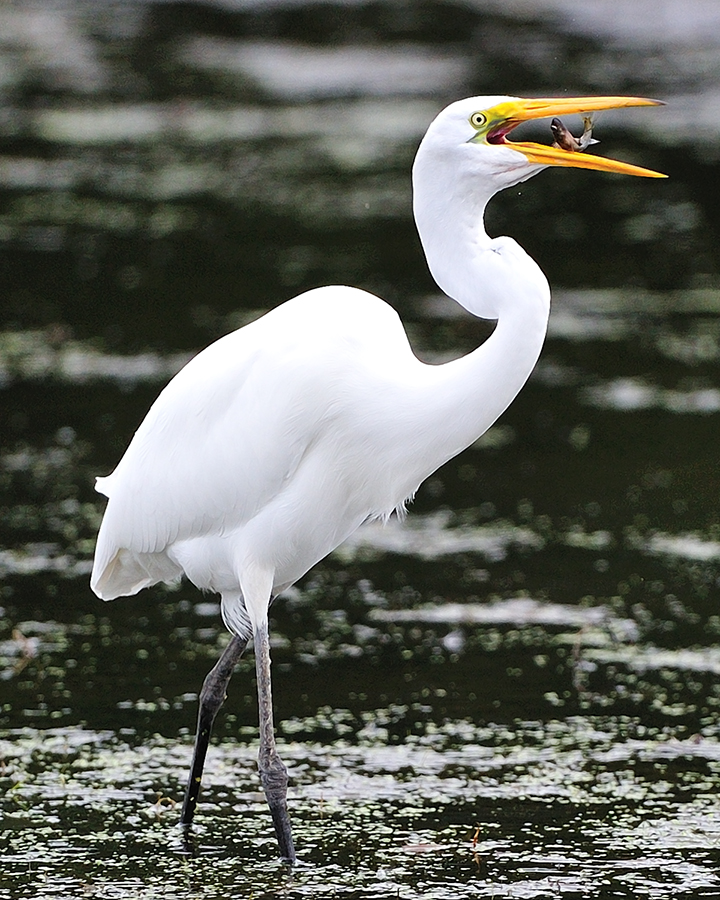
Great egret eating fish at Montezuma National Wildlife Refuge.